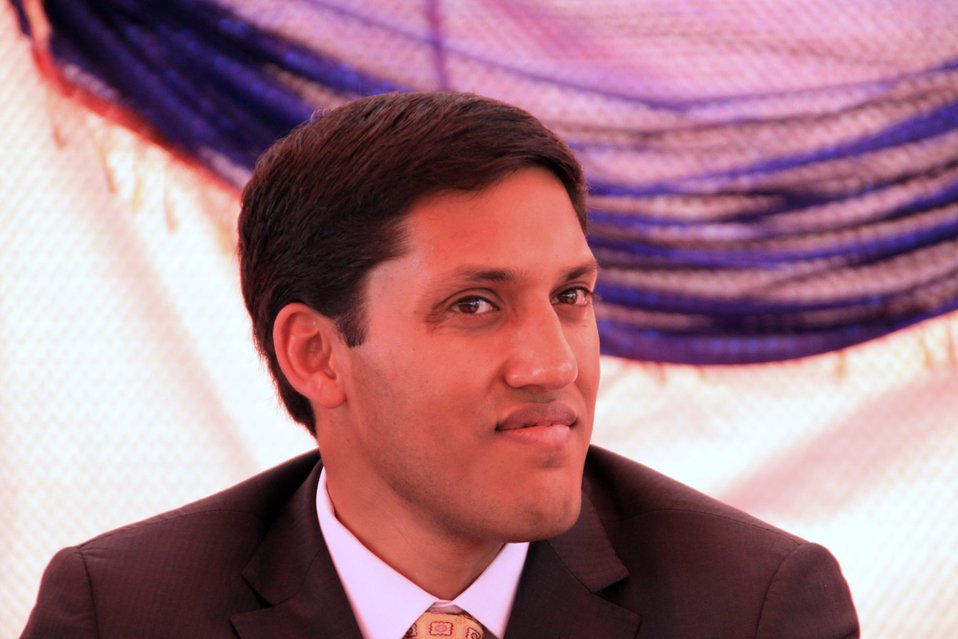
Badam Bagh Farm